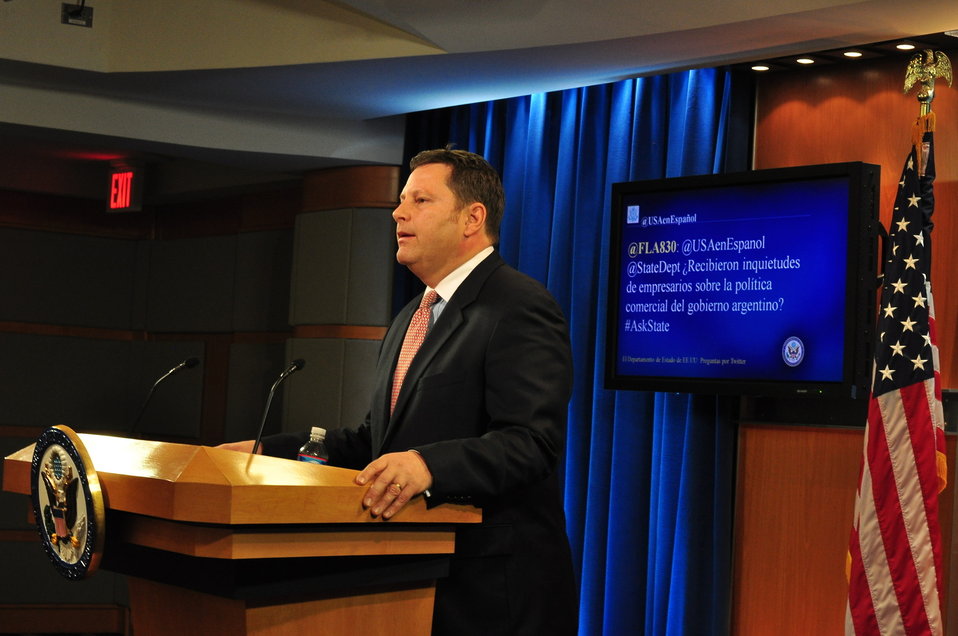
Acting Assistant Secretary Hammer Responds to #AskState Questions in Spanish

Acting Assistant Secretary of State Mike Hammer responds to #AskState questions during the U.S. Department of State's first Twitter Briefing in Spanish in Washington, D.C., on March 1, 2012.